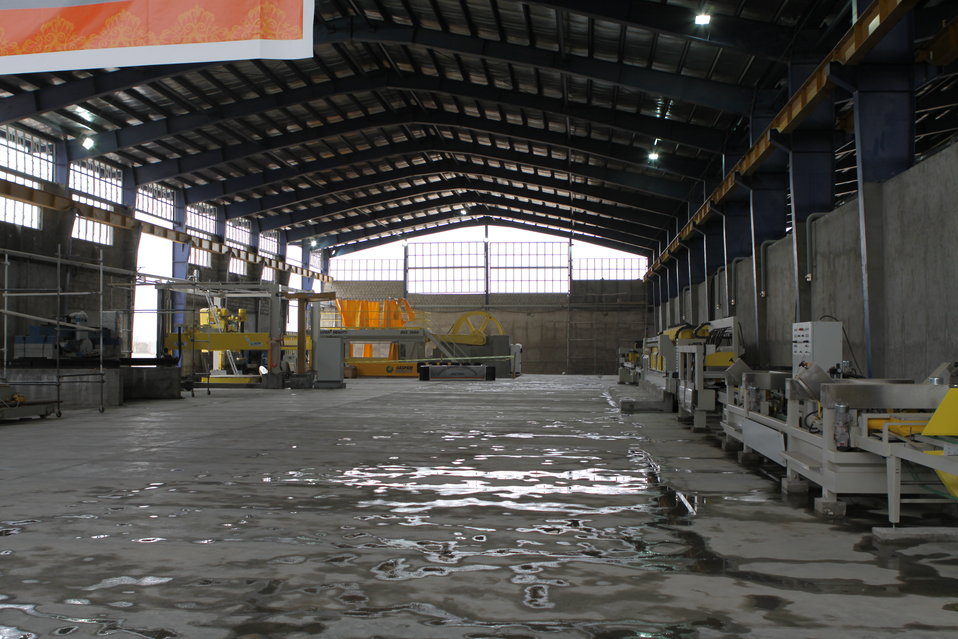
100525 Hirat Marble Conference 182